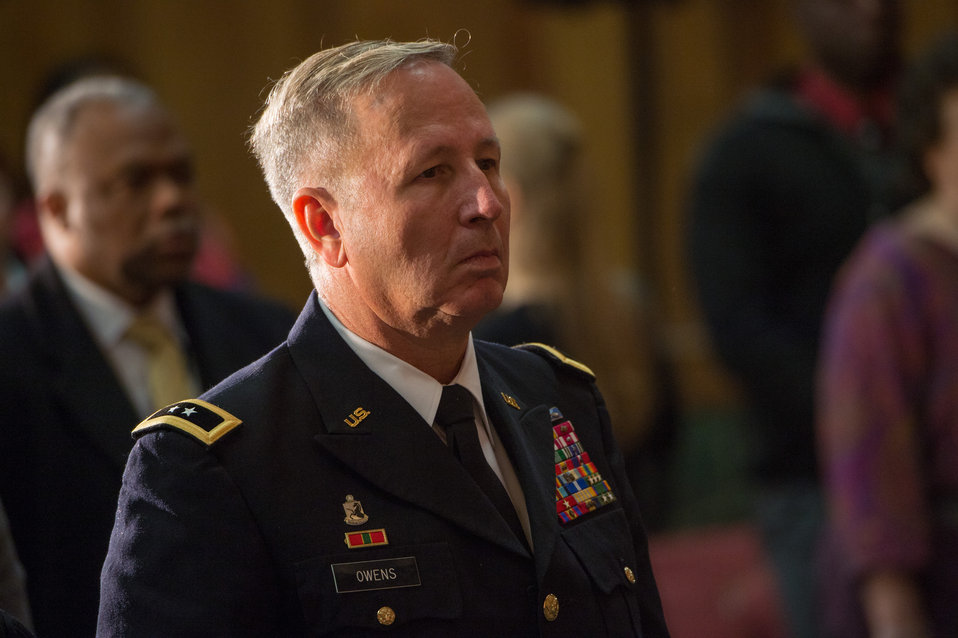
U.S. Department of Agriculture (USDA), Farm Service Agency (FSA), Common Management and Price Support Chief Darren G. Owens, (Major General, USA Ret) and other present veterans and guests stand for the singing of 'God Bless America' during the close of the 2013 USDA Veterans’ Day Observance; whose theme is “VALOR; COURAGE; SACRIFICE – HONORING ALL WHO SERVED; ' in Washington, DC, on Wednesday, November 20, 2013.